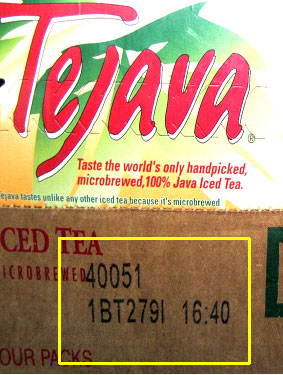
RECALLED - Iced Tea

December 9, 2011 - Product Recall - Voluntarily Recall of Limited Quantity of 12 oz Tejava® Premium Iced Tea.